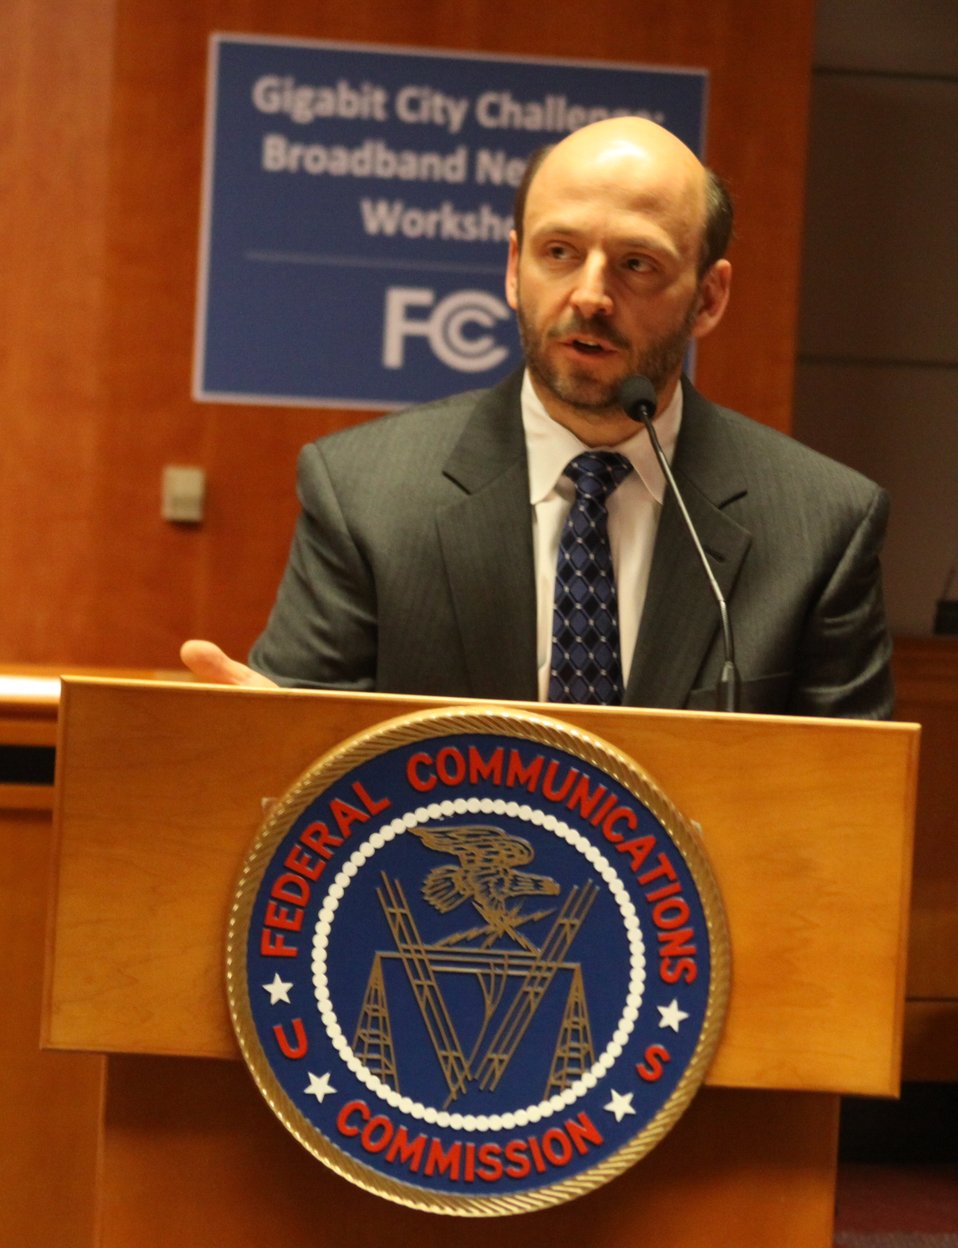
Tim Stelzig, Deputy Chief, Wireline Competition Bureau at the March 27, 2013 Gigabit City Challenge: Broadband Networks Workshop